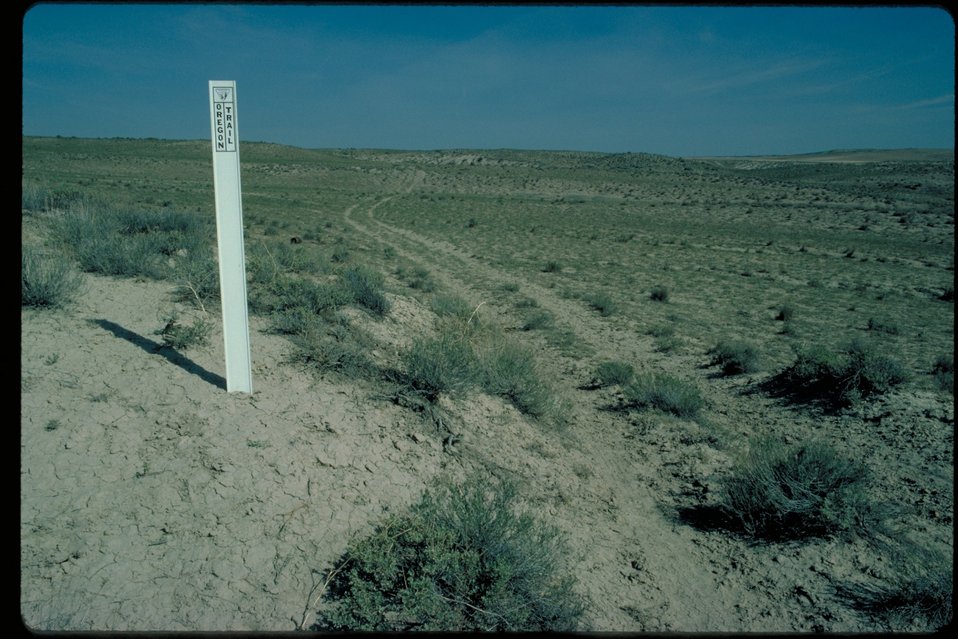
Oregon Trail near Thousand Springs Cultural resource Historic area LSRD Lower Snake River District